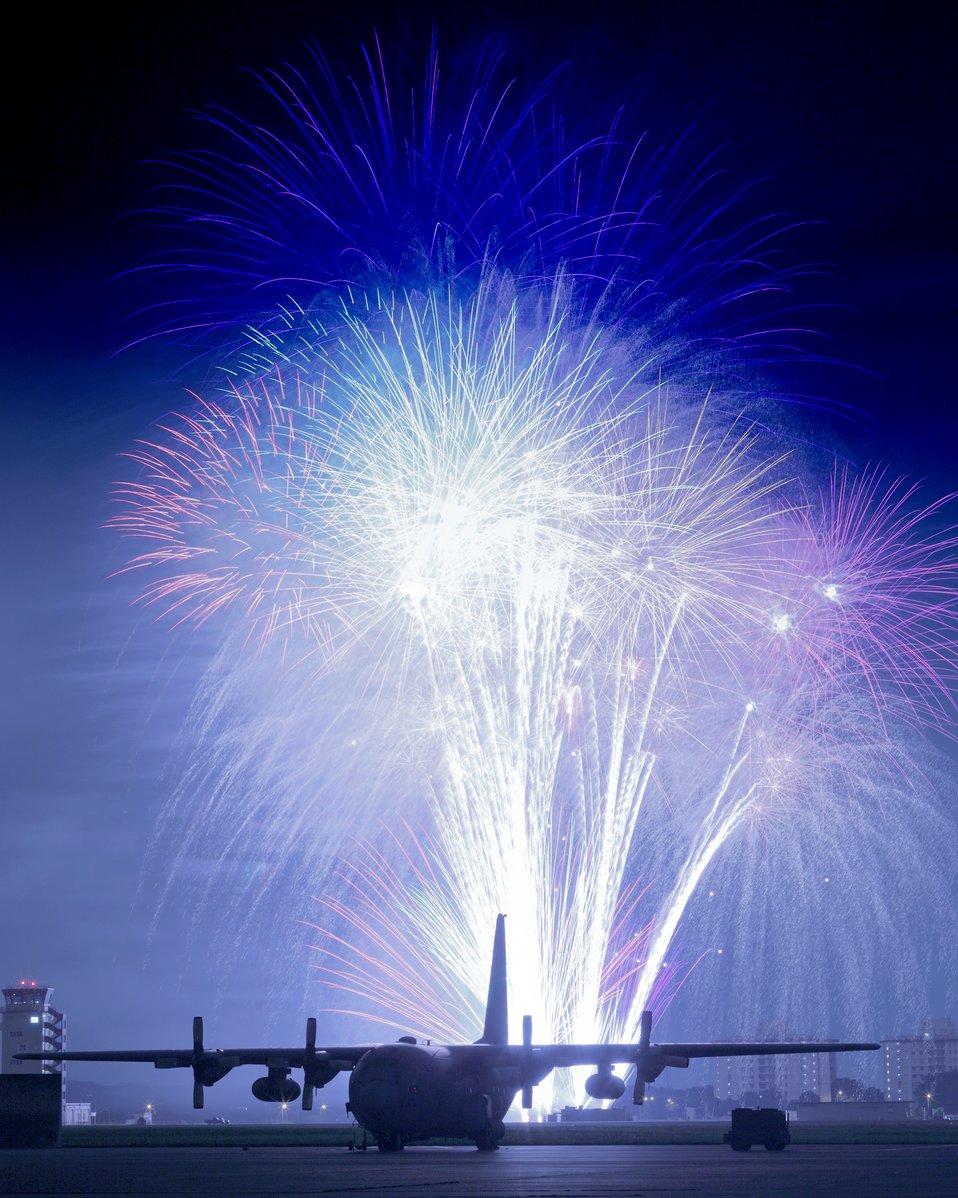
Fireworks Celebration

Fireworks burst over Yokota Air Base, Japan, July 3, 2010. The day kicked off with the Firecracker 5K run and continued with a wide variety of activities throughout the day including go-carts, a petting zoo, live entertainment, food and fireworks.